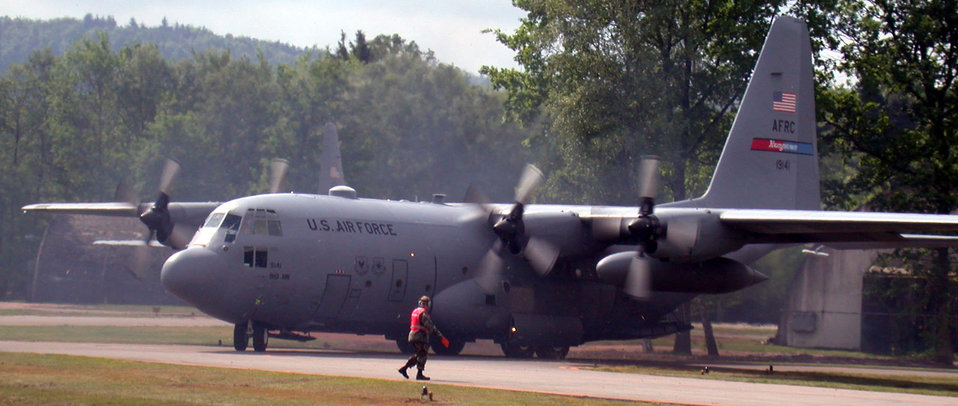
Take off

RAMSTEIN AIR BASE, Germany -- An Air Force reservist from the 910th Maintenance Squadron launches a C-130 Hercules from here for a mission supporting Operation Iraqi Freedom. More than 200 mobilized reservists from the 910th Airlift Wing at Youngstown Air Reserve Station, Ohio, are deployed here and assigned to the 38th Airlift Squadron (Provisional).